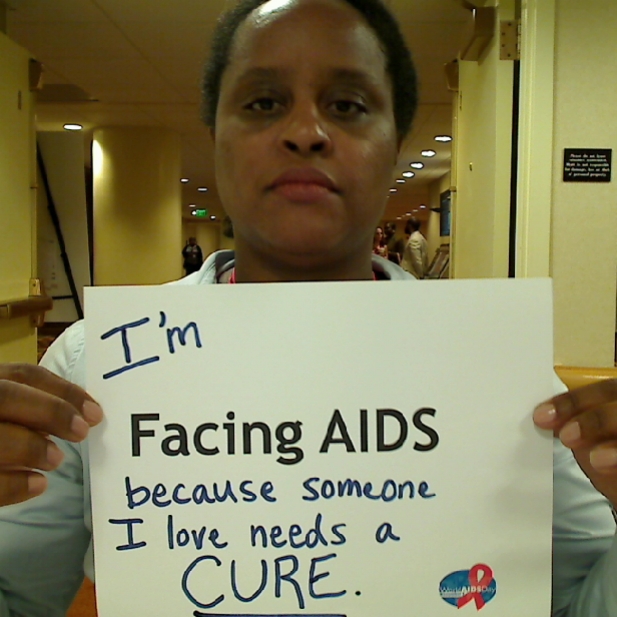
I'm Facing AIDS because someone I love needs a CURE!